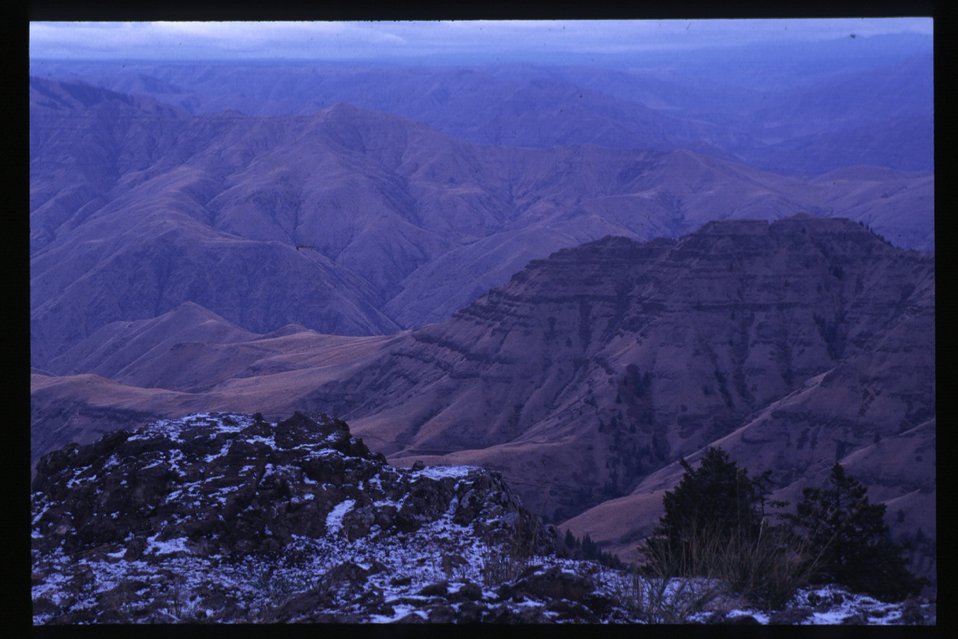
North Idaho Scenic Craig Mountain Wildlife Management Area Couer d'Alene Field Office UCSC Upper Columbia Salmon Clearwater District